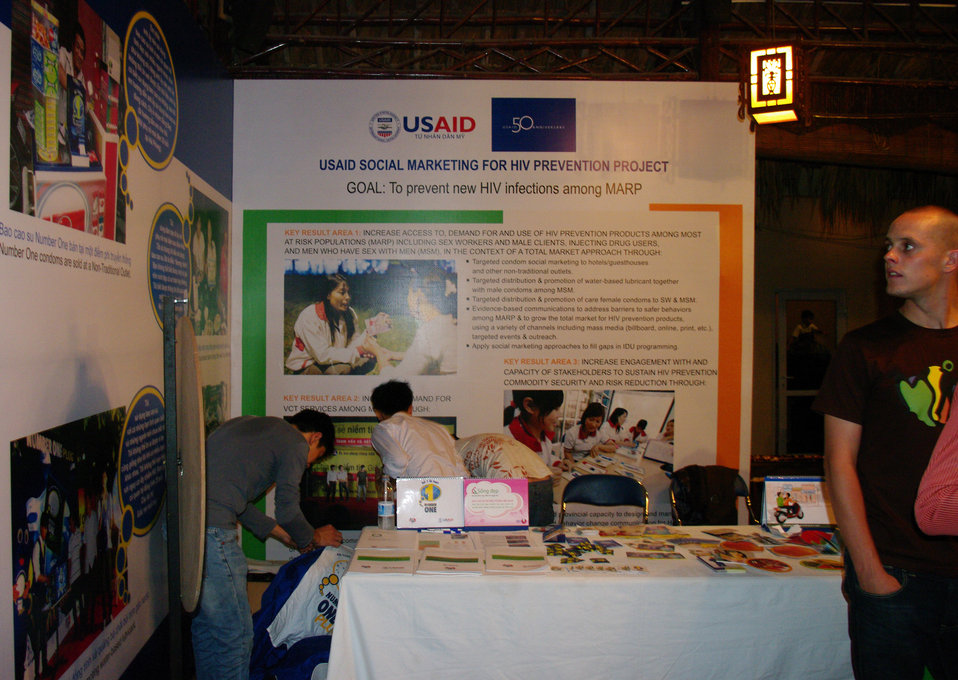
PEPFAR, U.S. Embassy Host Dengue Fever Concert in Hanoi